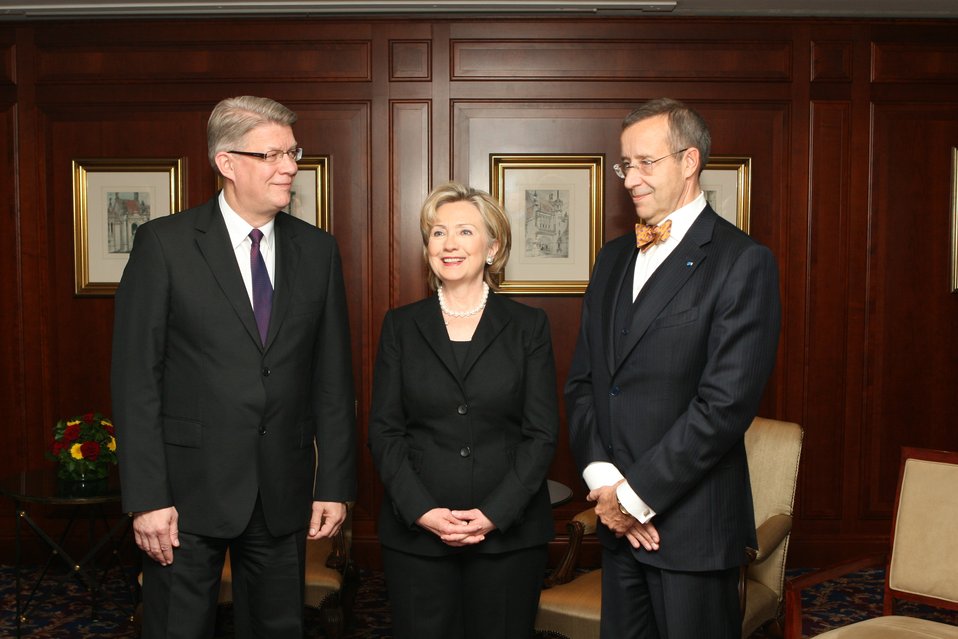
Secretary Clinton With Diplomats

U.S. Secretary of State Hillary Rodham Clinton with diplomats in Berlin, Germany November 8, 2010.